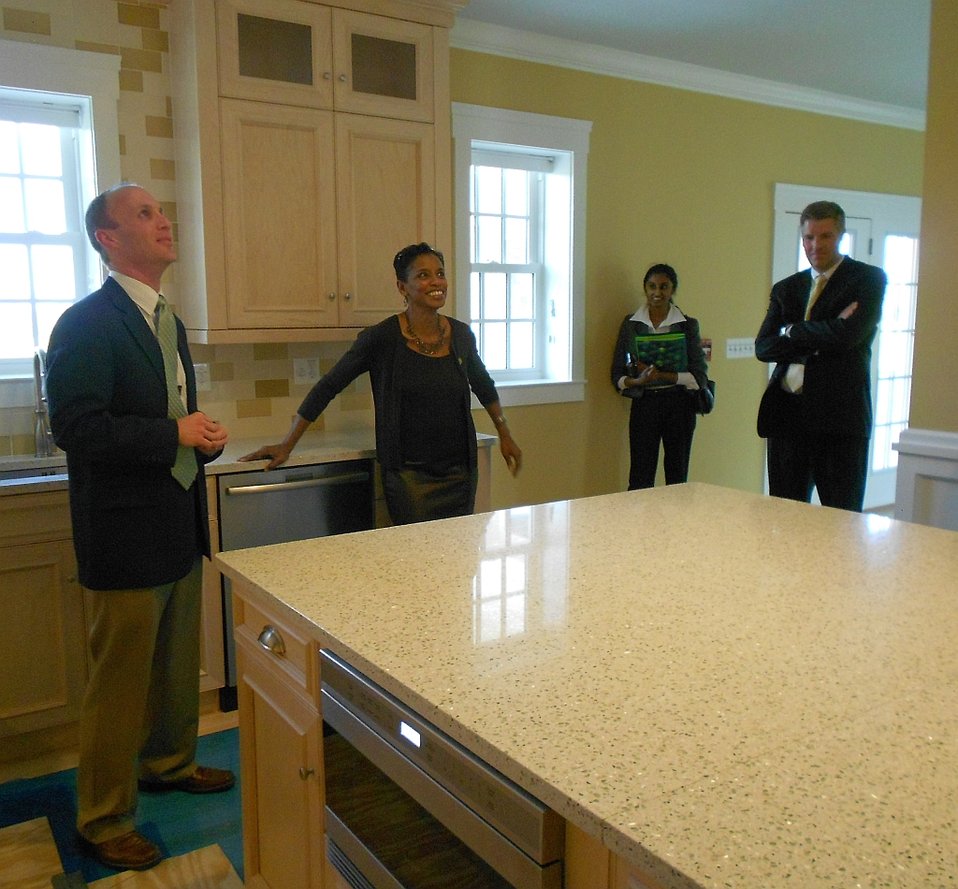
Edwards NZERTF Tour #1

U.S. Congresswoman Donna Edwards (center) from Maryland’s 4th District tours the NIST Net Zero Energy Residential Test Facility kitchen with William Healy (far left), Leader of the Alternative Energy Systems Group in NIST’s Engineering Laboratory and NIST Director Patrick Gallagher (far right).